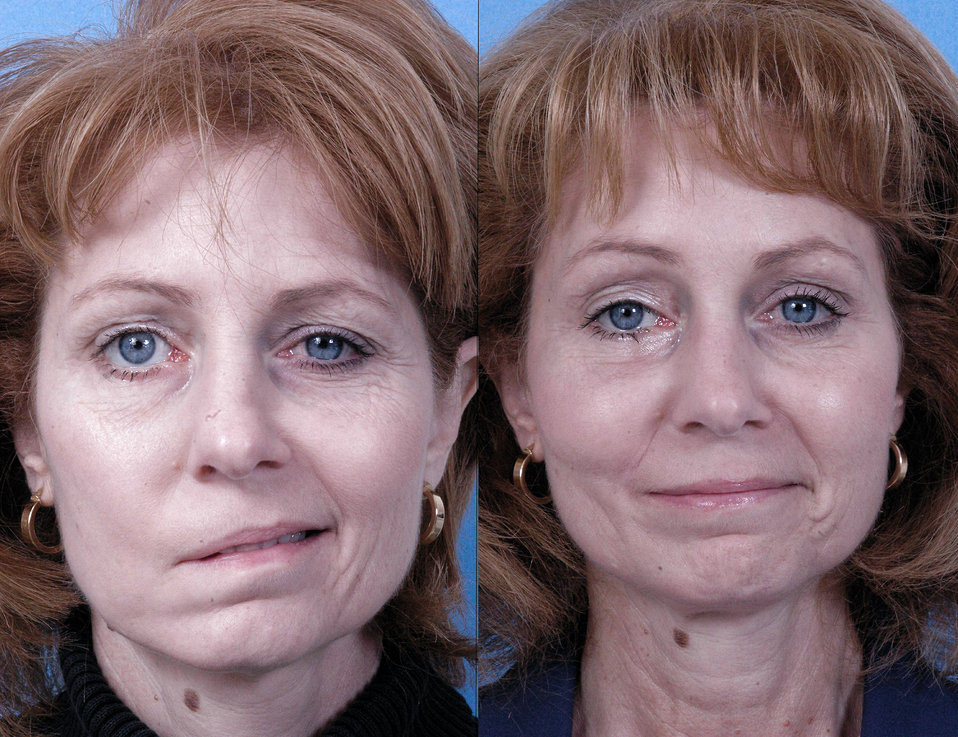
New treatment offers hope for facial paralysis patients

These before-and-after photos show the results achieved after temporalis tendon transfer surgery. The patient suffered from facial paralysis and underwent surgery in January 2008.